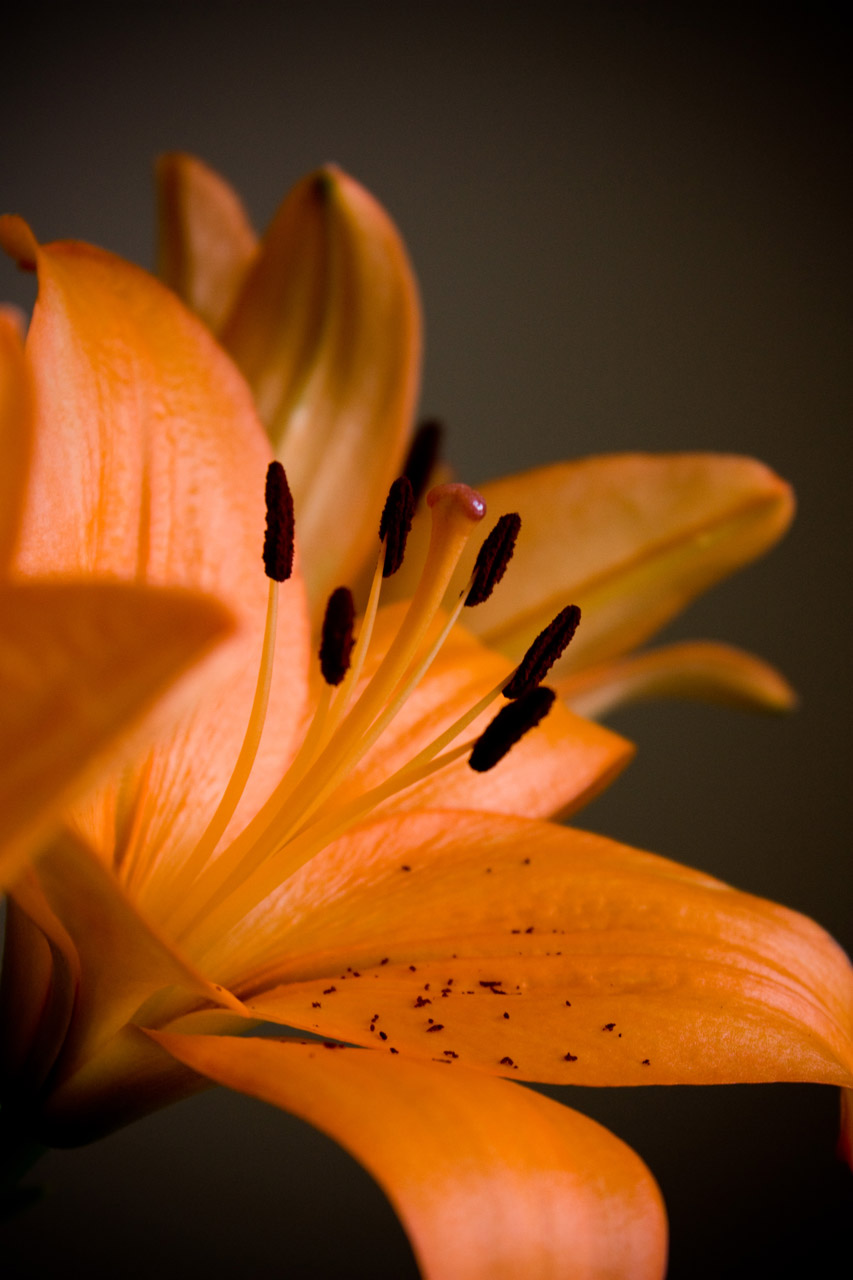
Lilies

Orange lilies.